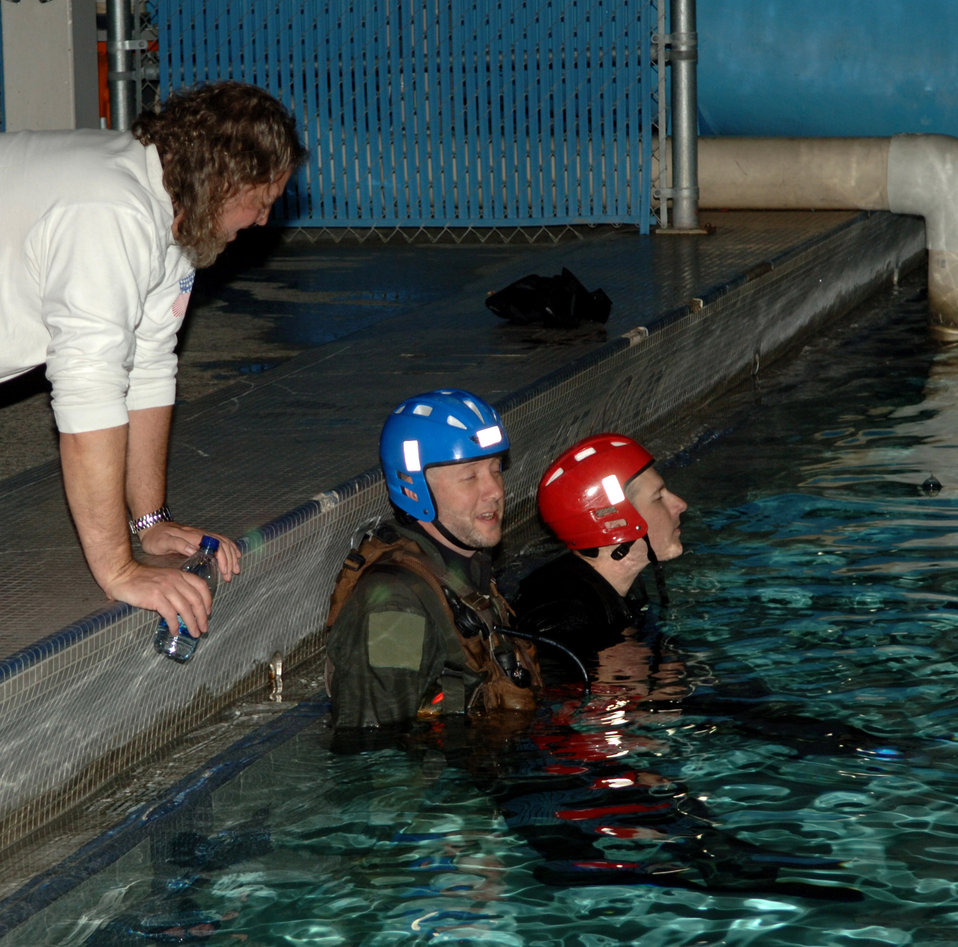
MTV visits Fairchild Air Force Base

Jack Baribault, an MTV cameraman, leans over the water to talk to Shawn Mattaro (blue helmet), another MTV cameraman, as Mr. Mattaro awaits further instructions from a survival instructor (red helmet) during an open water survival lesson Nov. 18 at the aquatic center at Fairchild Air Force Base, Wash. Mr. Mattaro was required to take the open water survival instruction for the purpose of filming from inside the underwater egress training dunker as part of one of the episodes for the